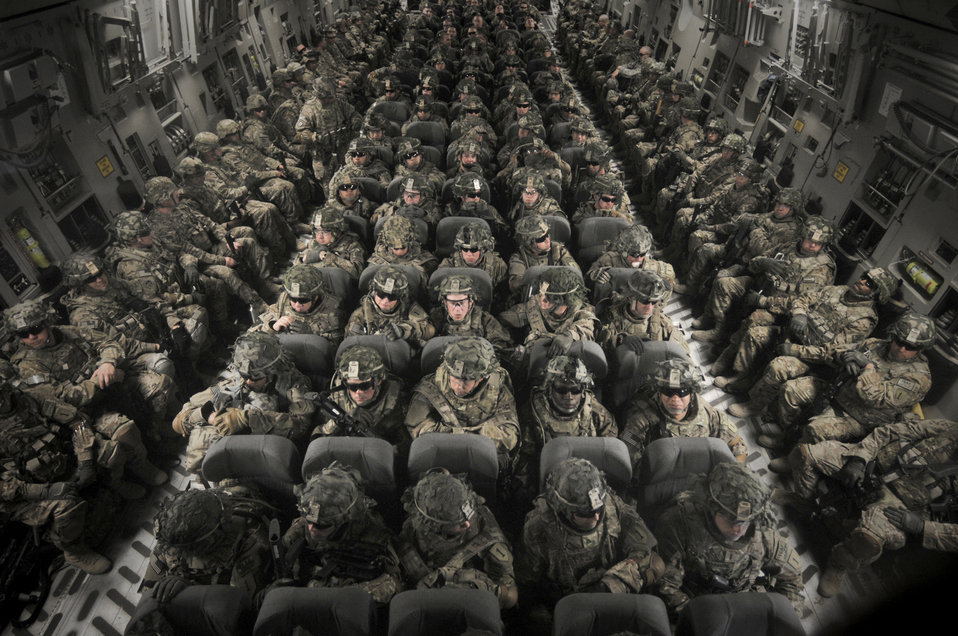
A packed flight

U.S. Soldiers fly aboard a C-17 Globemaster III from the Transit Center at Manas to their deployed location in Afghanistan, April 16, 2011.